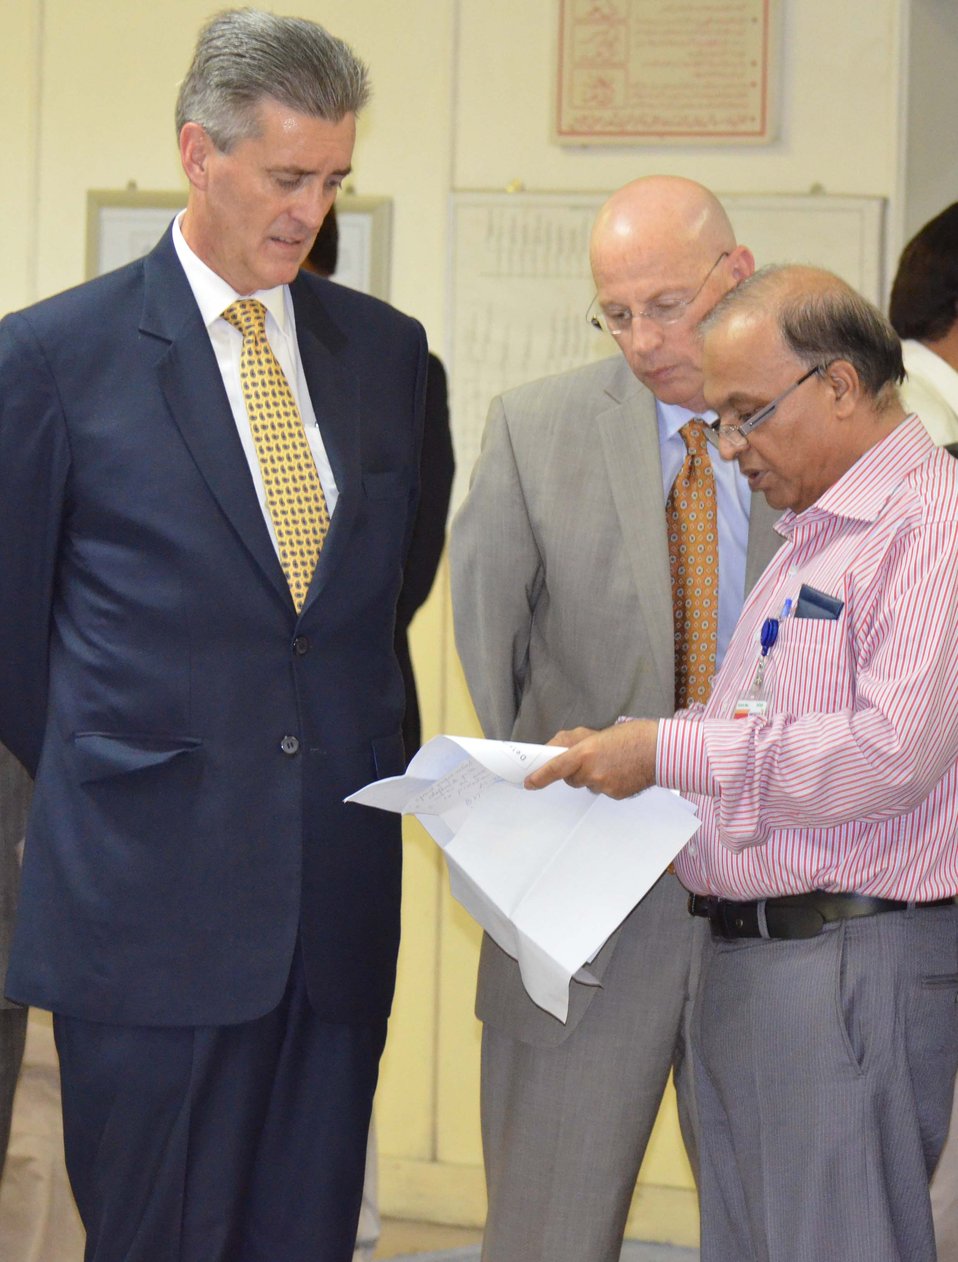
Ambassador Olson and USAID Mission Director Gregory Gottlieb being briefed by Sultan Zafar, CEO Genco Holding Company Limited